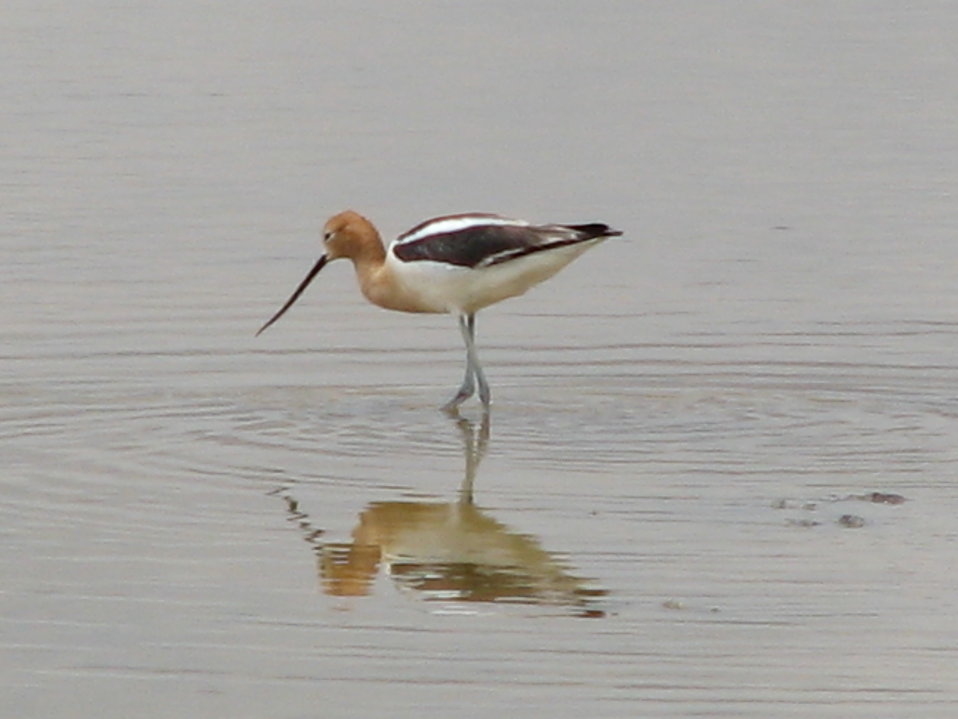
American avocet in trona mine tailings pond, Sweetwater County, Wyoming.

Credit: Pedro 'Pete' Ramirez, Jr. / USFWS